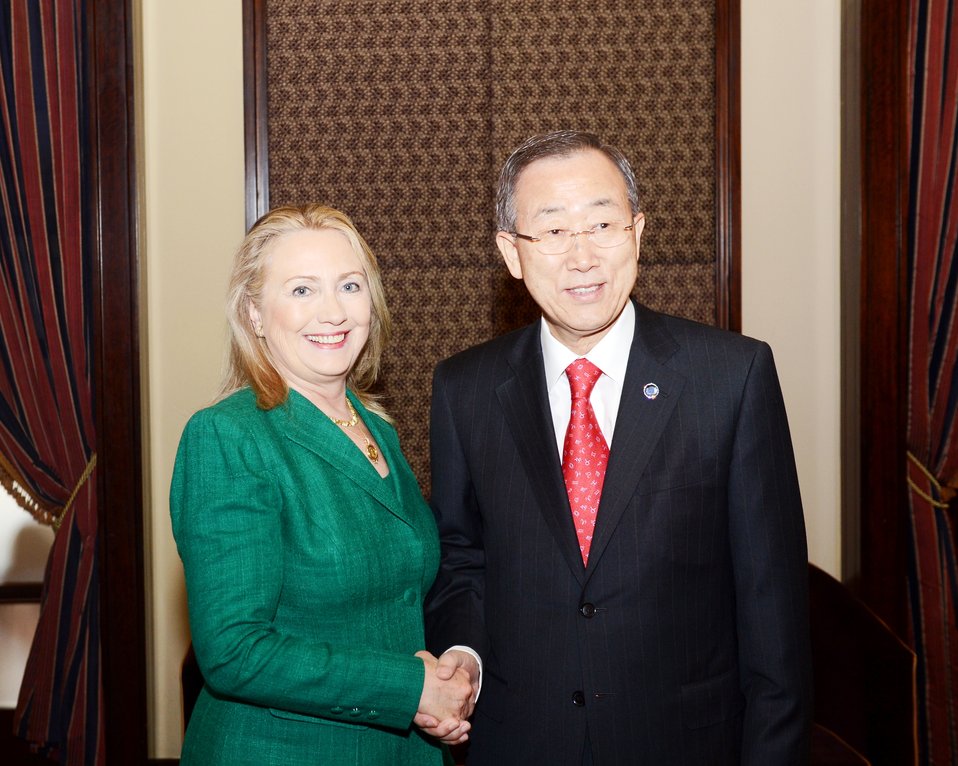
Secretary Clinton Meets With UN Secretary-General Ban Ki-moon

U.S. Secretary of State Hillary Rodham Clinton meets with with UN Secretary-General Ban Ki-moon at the King David Hotel in Jerusalem, November 21, 2012.